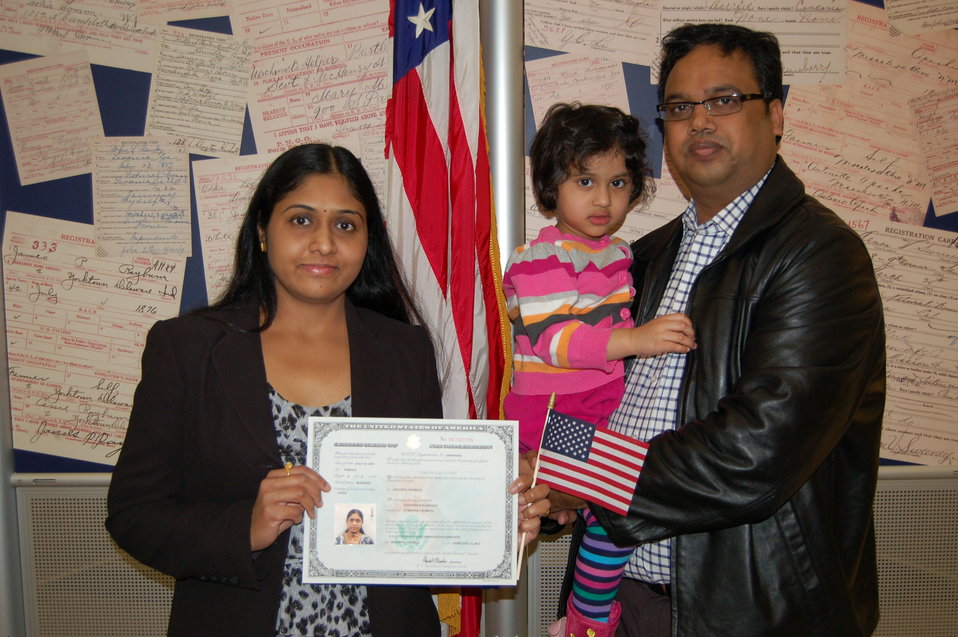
New Citizens